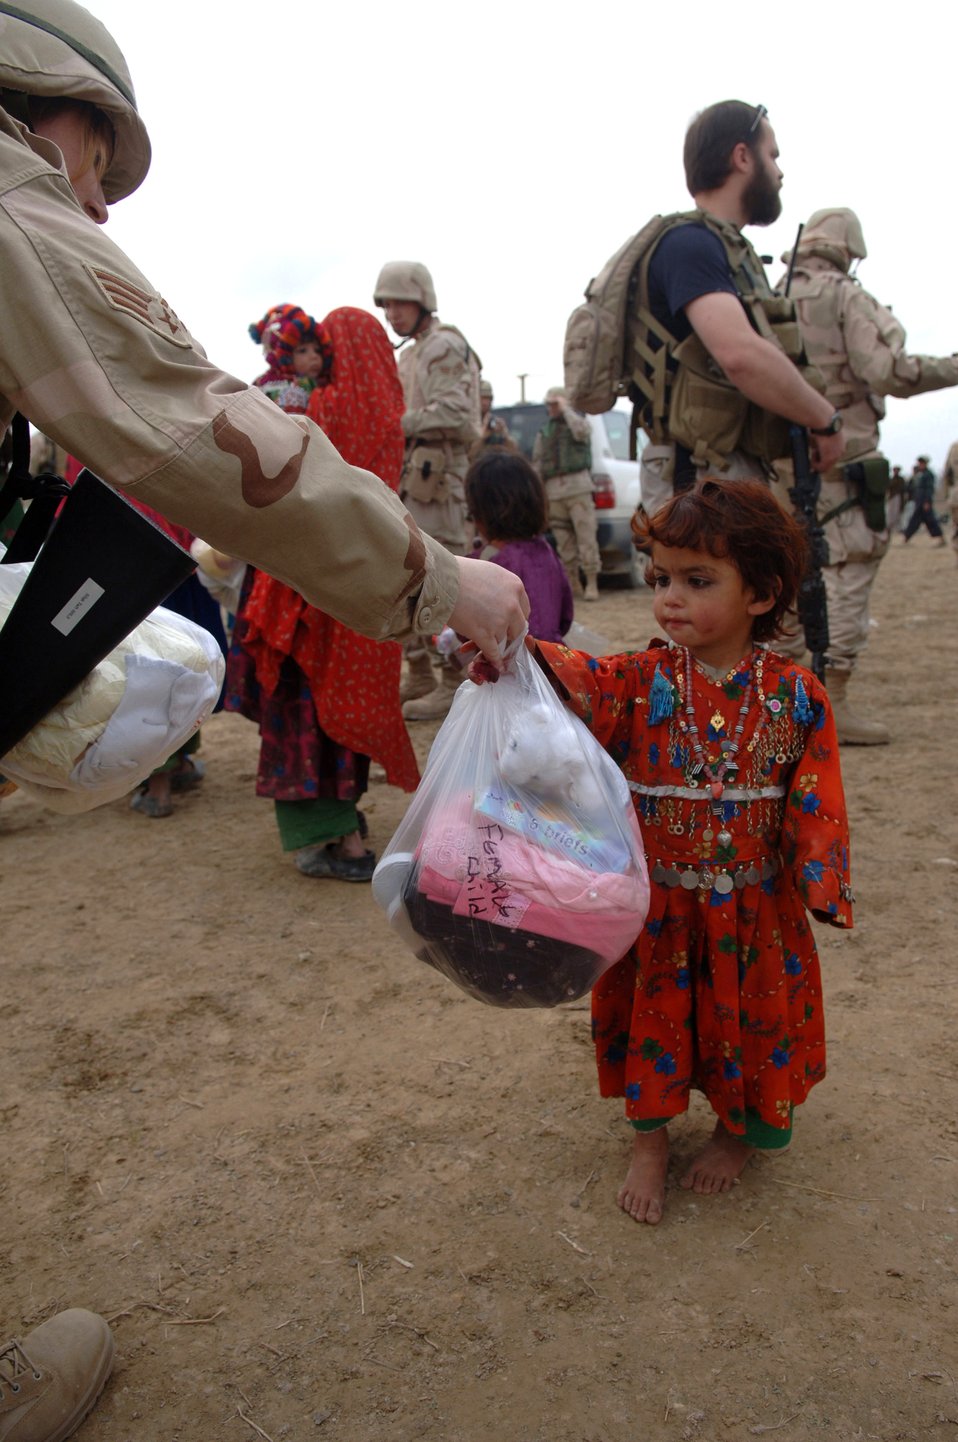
Airmen reach out

Senior Airman Jennifer Travise hands a young girl from Gadia, Afghanistan, a bag of basic necessities during a recent Adopt-A-Village visit. Airman Travise is an ammunitions accountability clerk with the 455th Expeditionary Aircraft Maintenance Squadron at Bagram Air Base, Afghanistan. She is deployed from Eielson Air Force Base, Alaska.